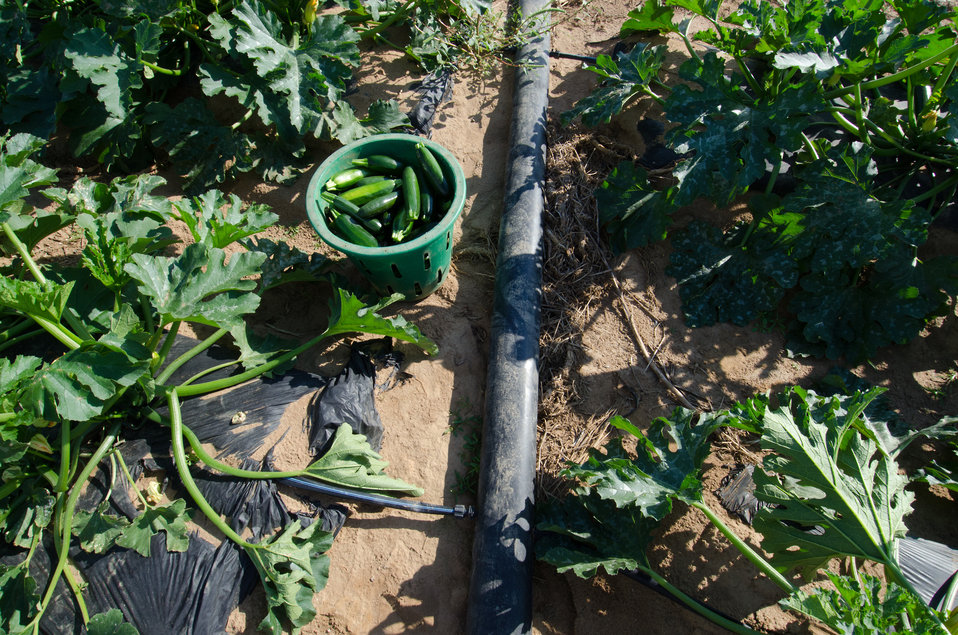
Kirby Farms third-generation family farm in Mechanicsville, VA, uses micro irrigation (drip watering) and plastic mulch (row covering) to efficiently grow green zucchini squash, on Friday, Sept 20, 2013. Water is pumped through a filtration/regulator system to flexible distribution pipes and hard connectors. Emitter hoses can be driven in where needed. Pressurized hoses emit water at a very slow rate near the base of the plants. Computers or timers provide additional controls. A micro irrigation system, also known as drip or trickle irrigation, is used to water directly to the plant root zone utilizing surface or subsurface applicators. For more information please see www.nrcs.usda.gov/Internet/FSE DOCUMENTS/nrcs141p2 024038...
Plastic sheeting is a form of mulch. It conserves soil moisture and reduces energy
use associated with irrigation, moderates soil temperature, provide erosion control, suppresses weed growth, facilitates the establishment of vegetative cover, improves soil quality, and reduces airborne particulates.